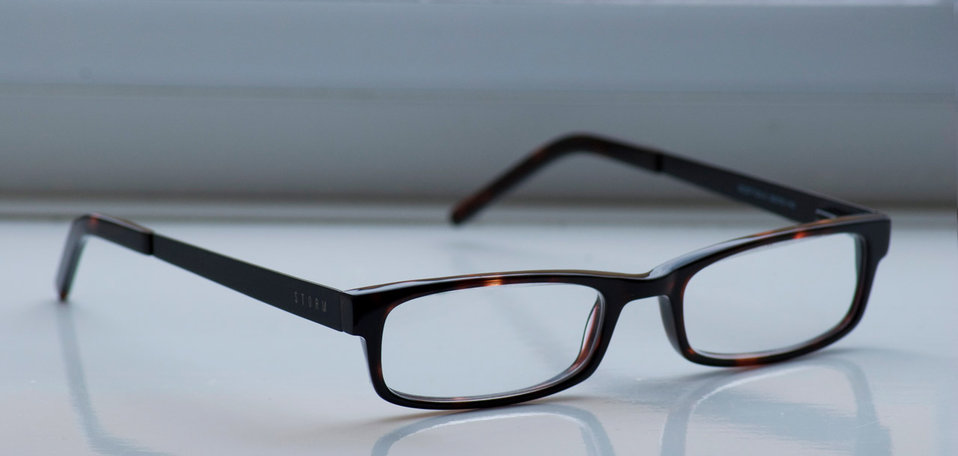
Spectacles glasses

Dark brown spectacles glasses.